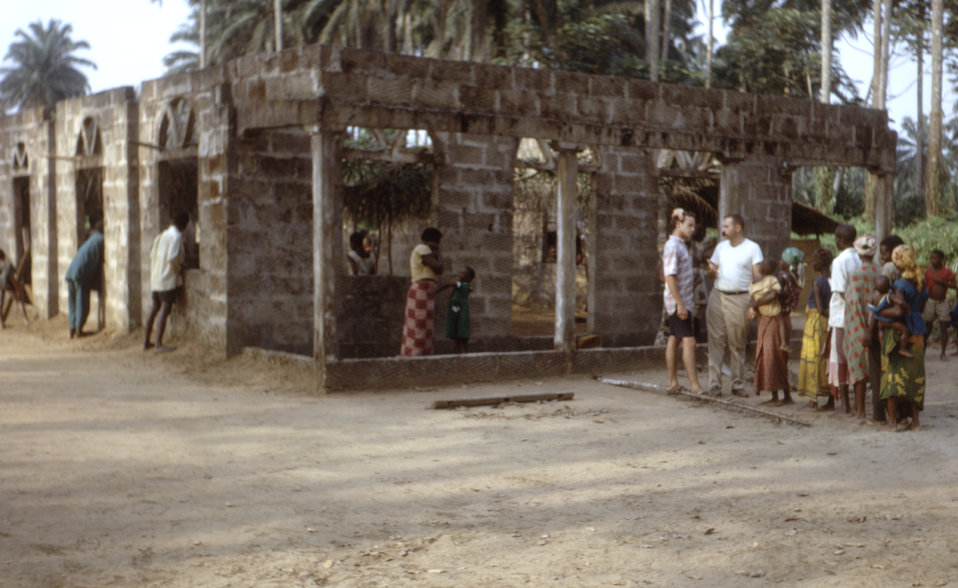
After the initial nutritional assessment was determined for each refugee within a camp, dry food rations were distributed based on the needs of each individual.